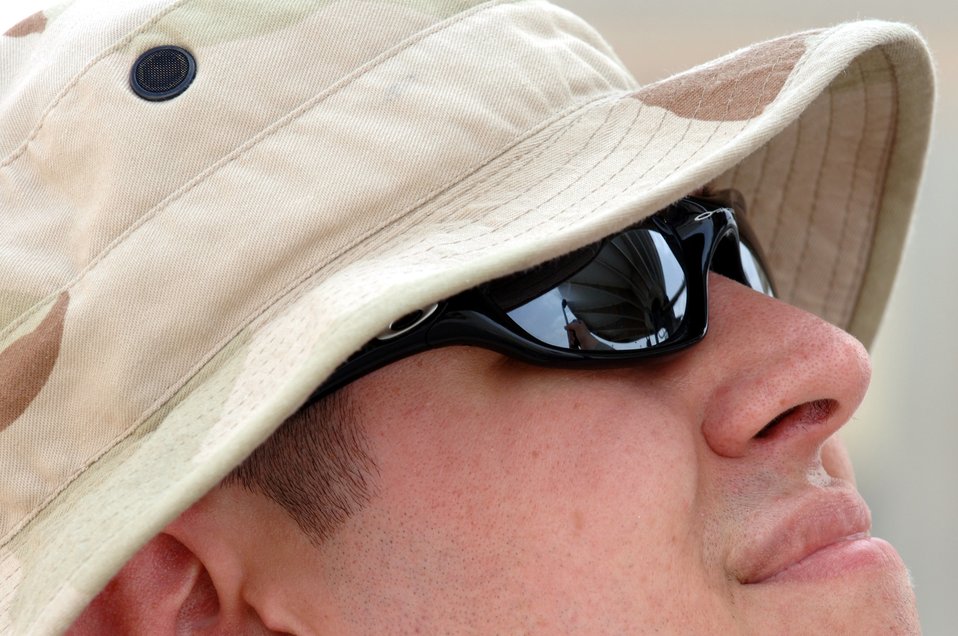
It's a wash

Staff Sgt. Michael Droddy power-washes satellite dishes at a deployed location in Southwest Asia on Sunday, March 19, 2006. The satellites provide communication capabilities to forward-deployed units. Sergeant Droddy is with the 379th Expeditionary Communications Squadron.